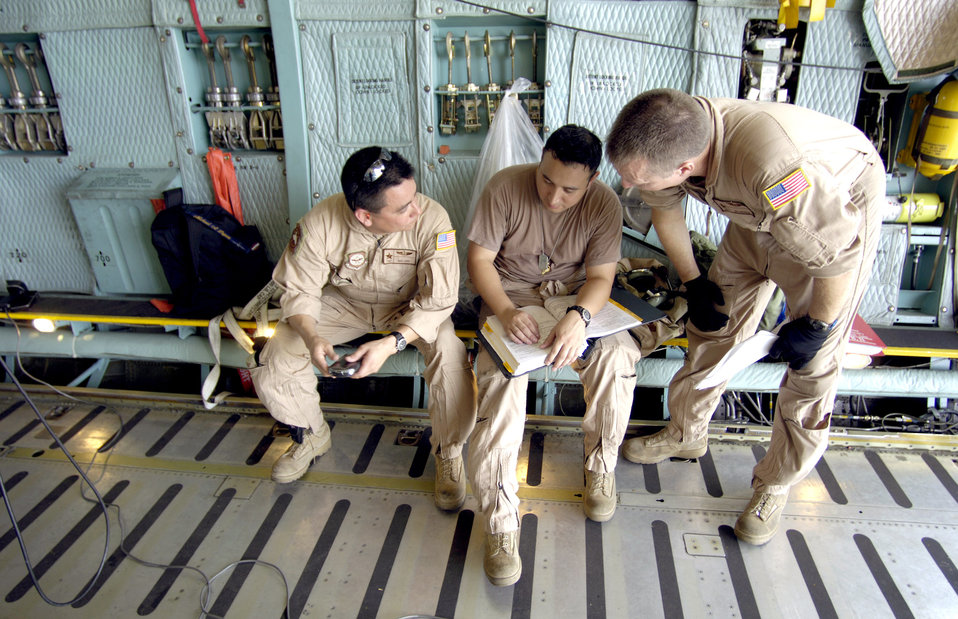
Pakistan relief efforts

HICKAM AIR FORCE BASE, Hawaii -- Loadmasters Tech. Sgt. Mike Lopez, Senior Airman Marcial Cadena and Staff Sgt. Joe Nicholes, check a technical order before loading a CH-47 Chinook heavy lift helicopter onto their C-5 Galaxy here. The Airmen from the Air Force Reserve 433rd Airlift Wing, Lackland Air Force Base, Texas, helped ferry 60 troops, four helicopters and support equipment to Pakistan to support earthquake relief operations Oct. 16. The Soldiers are from Company B, 214th Aviation Regiment of the 2nd Battalion, 25th Aviation Regiment at nearby Wheeler Army Air Field.